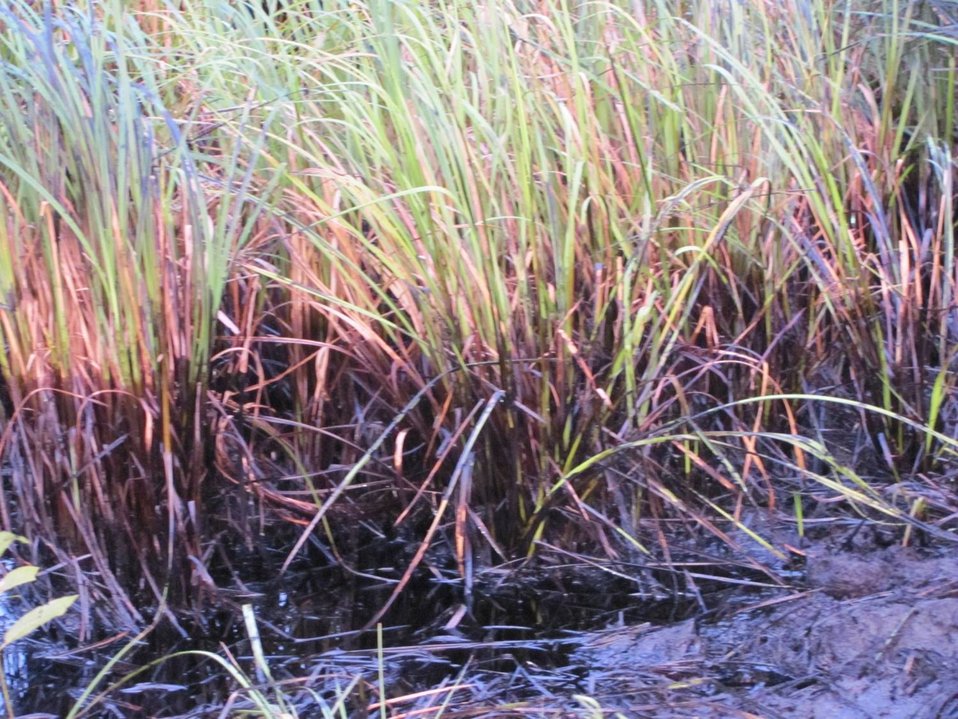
Oily vegetation

Oil-stained grass in a wetland area of the Kalamazoo River after an oil pipeline burst near Marshall, Michigan